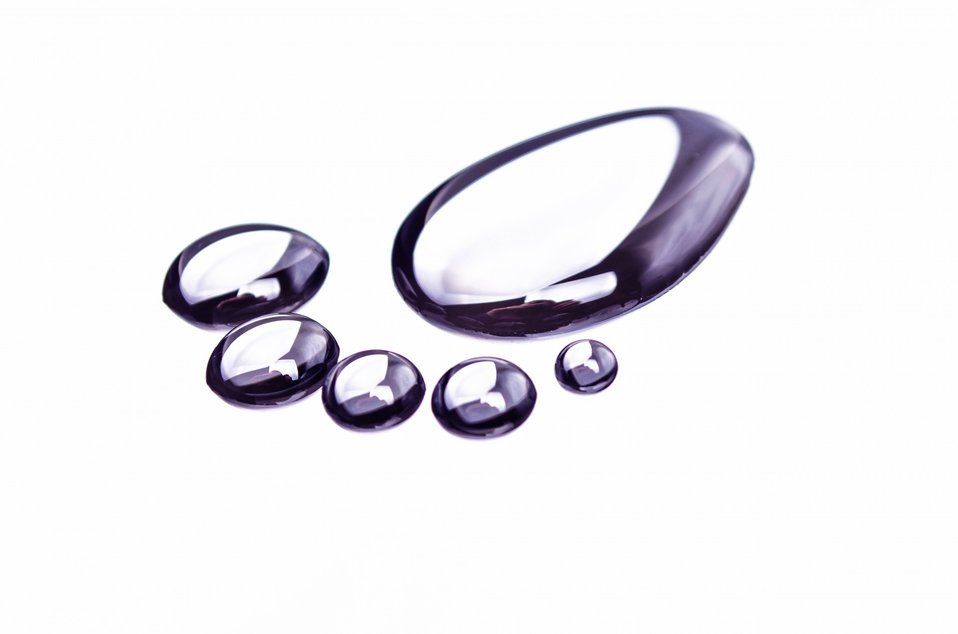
Footprint made up of water on a white background.